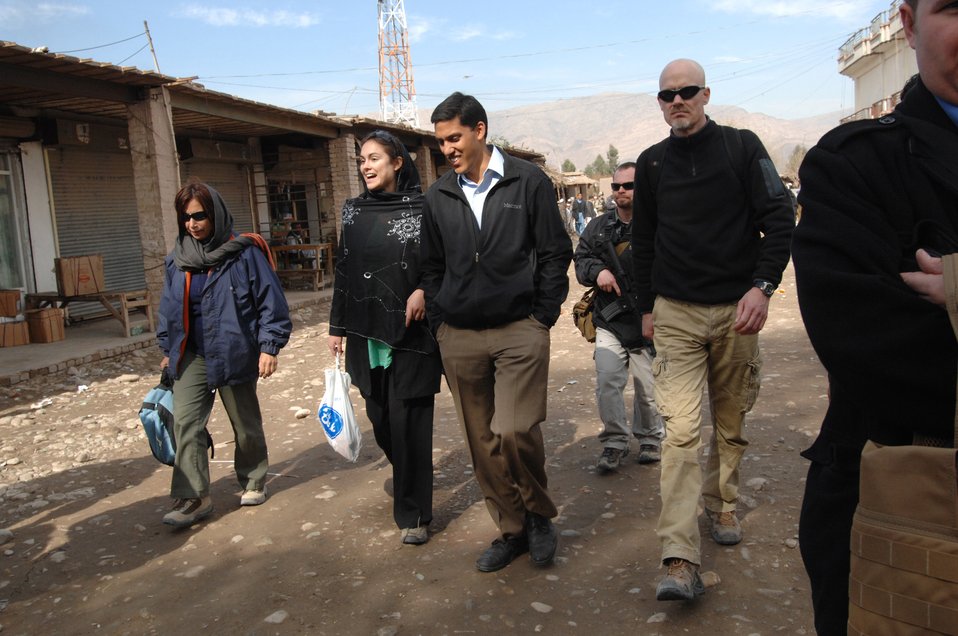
110209sv Shah409

Dr. Rajiv Shah, Administrator of the United States Agency for International Development (USAID), tours a market in Surkh Rod, Nangarhar province, on Wednesday, February 9, 2011. (S.K. Vemmer/Department of State)